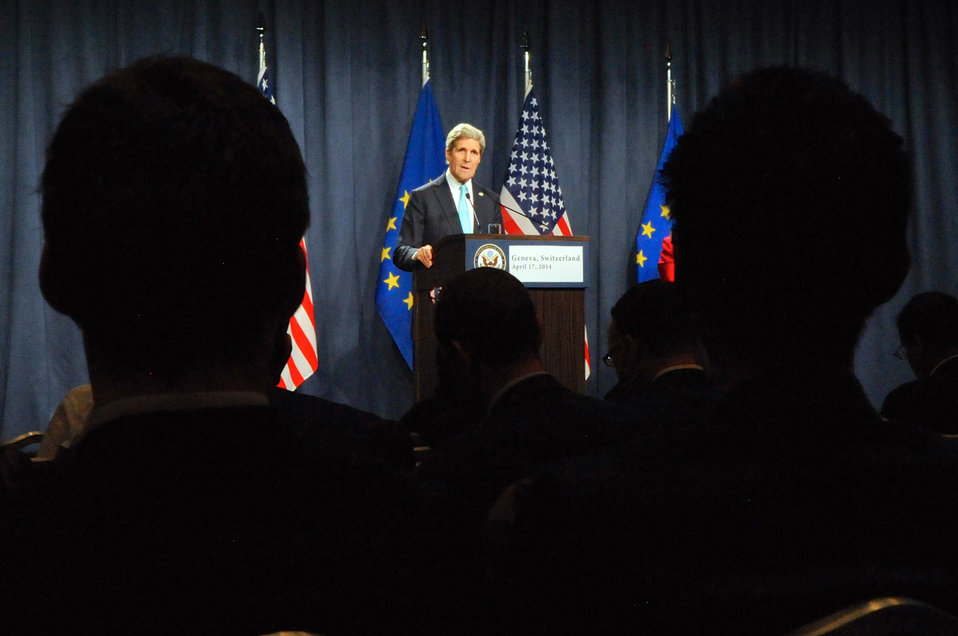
Secretary Kerry Speaks at News Conference Following Ukraine Meeting in Geneva

U.S. Secretary of State John Kerry speaks at a news conference following a meeting in Geneva, Switzerland, on April 17, 2014, with Russian, Ukrainian, and European Union officials about Ukraine.